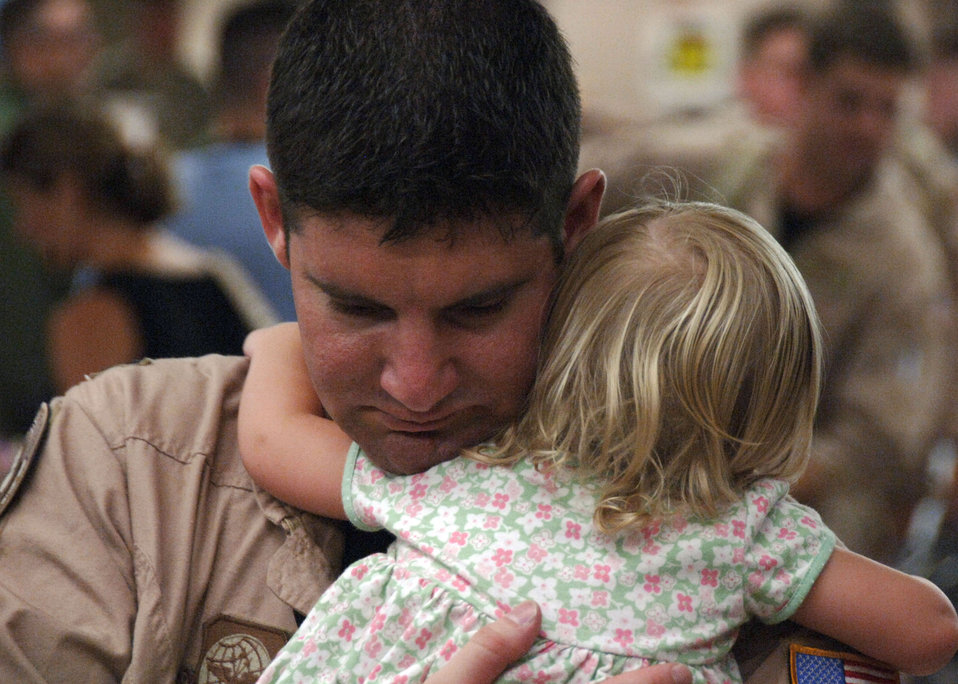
Charleston Airmen deploy to support war on terrorism

Capt. James Salazar hugs his 20-month-old daughter, Elizabeth, prior to the 15th Airlift Squadron's departure Aug. 27 at Charleston Air Force Base, S.C. Captain Tarkowski is assigned to the 15th AS.